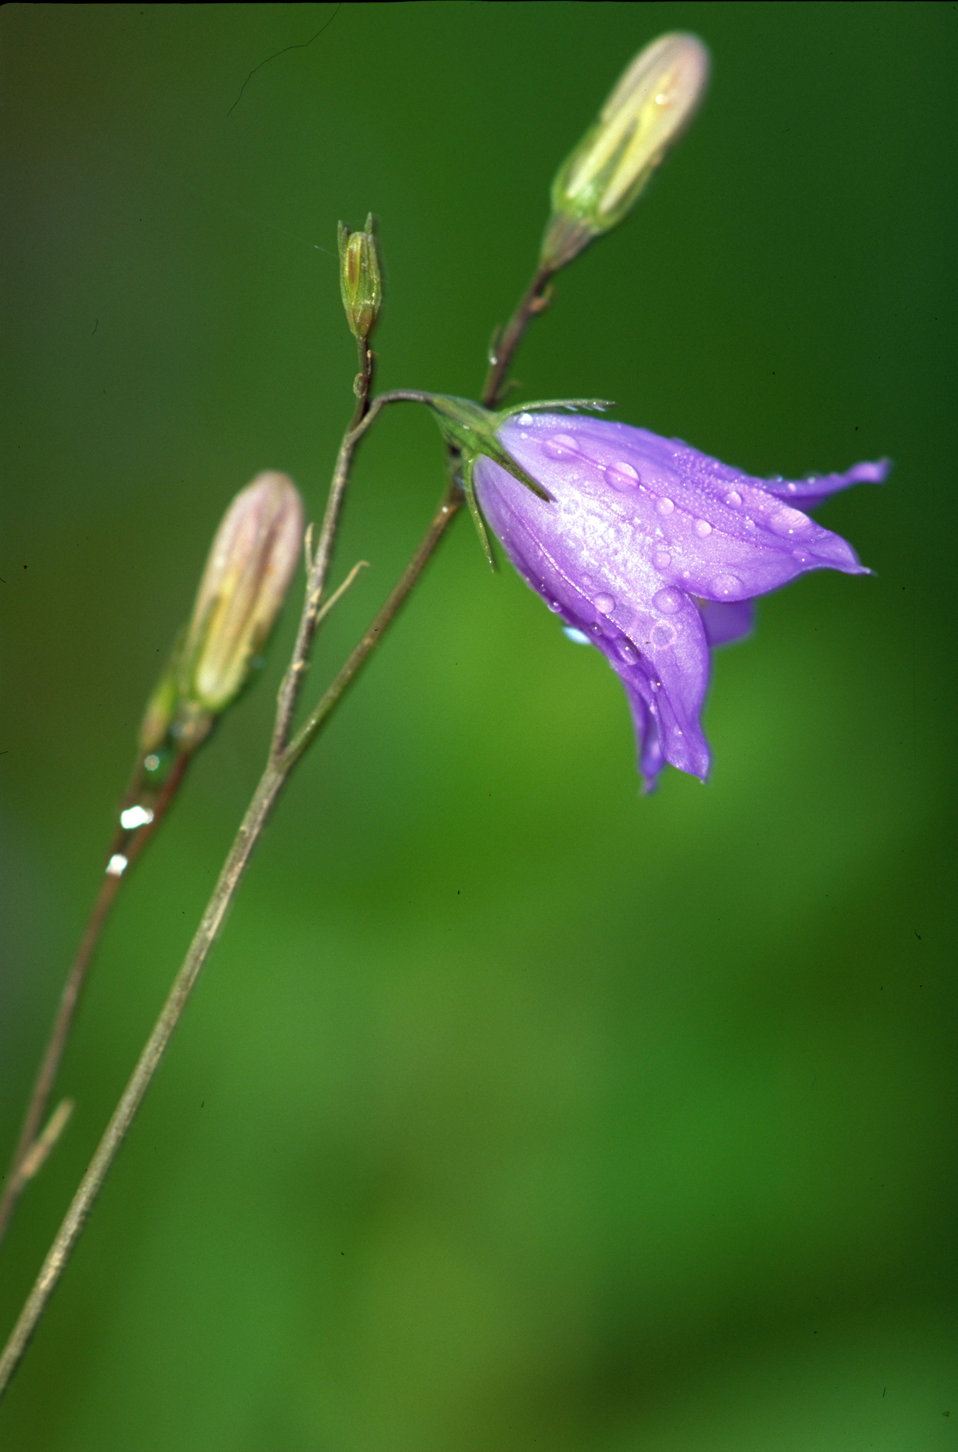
Bluebell

The flower looks like a bell.